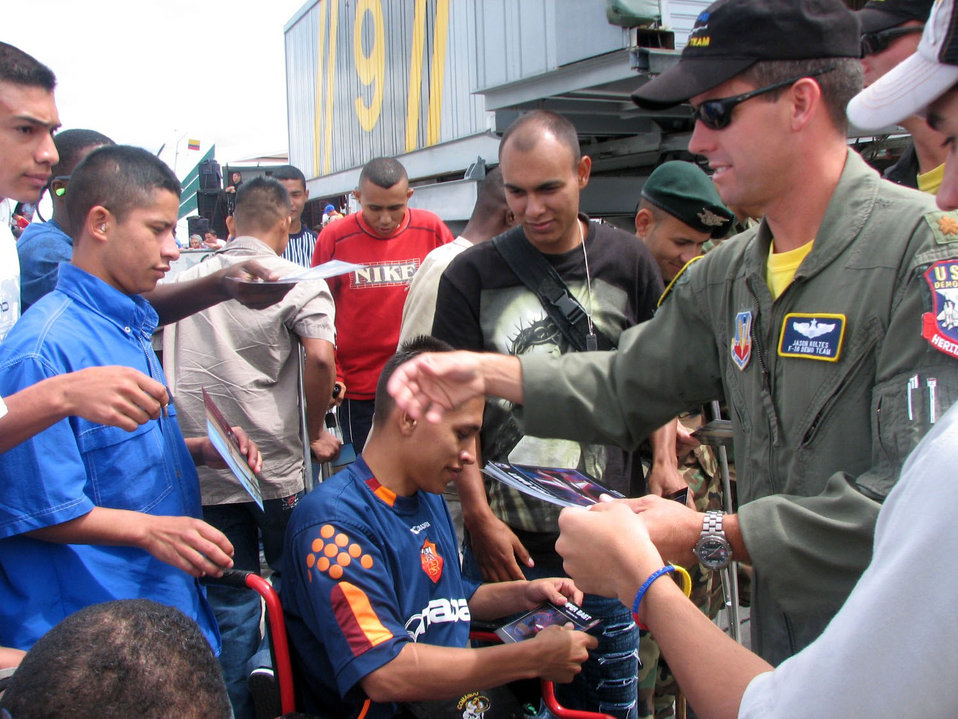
Spreading goodwill

Maj. Jason Koltes hands out mementos to injured Columbian military veterans on Sunday, July 2. Major Koltes is the commander and a pilot for the F-16 Fighting Falcon Viper East aerial demonstration team. The team was in Colombia for the Rio Negro air show.